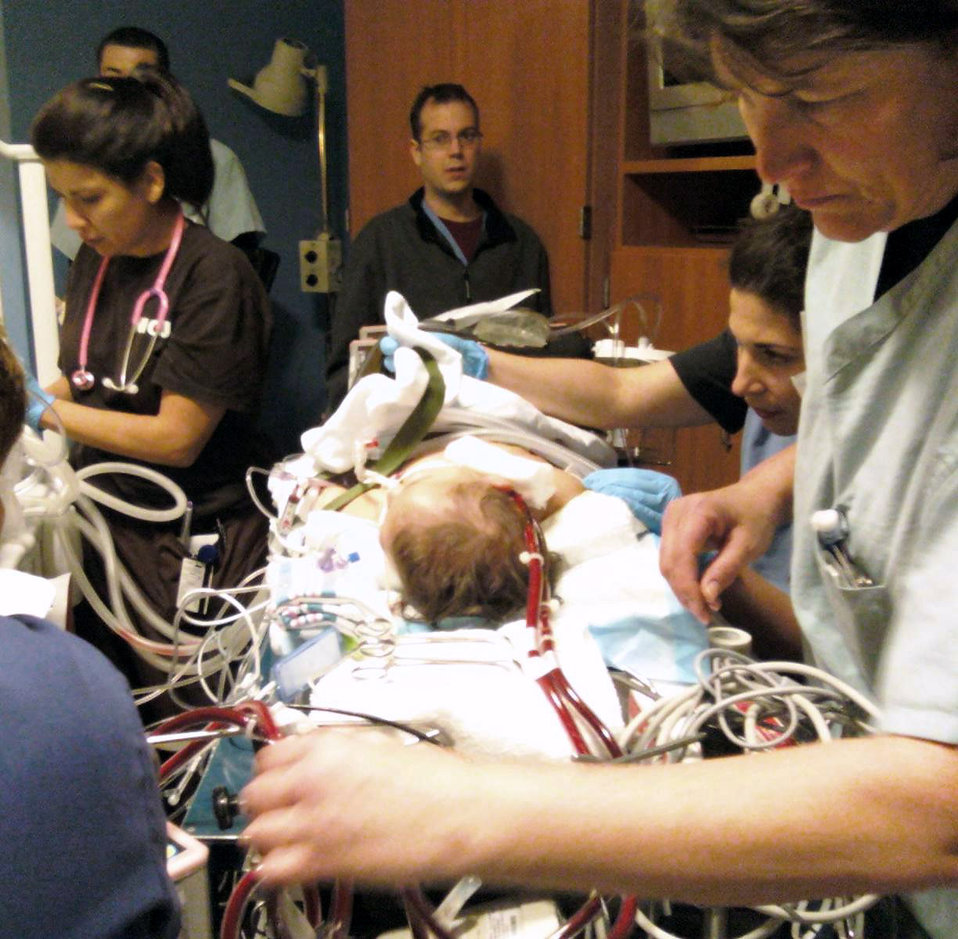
Wilford Hall team transports critically ill infant

Medical personnel from Wilford Hall Medical Center, Lackland Air Force Base, Texas, and Scott and White Hospital move an 8-month-old child onto a portable extracorporeal membrane oxygenation transport cart as they prepare to move the child from the Temple, Texas, hospital to a hospital in San Antonio. The Air Force team put the critically-ill baby on ECMO, a heart-lung bypass machine, on Feb. 9 to save her life.